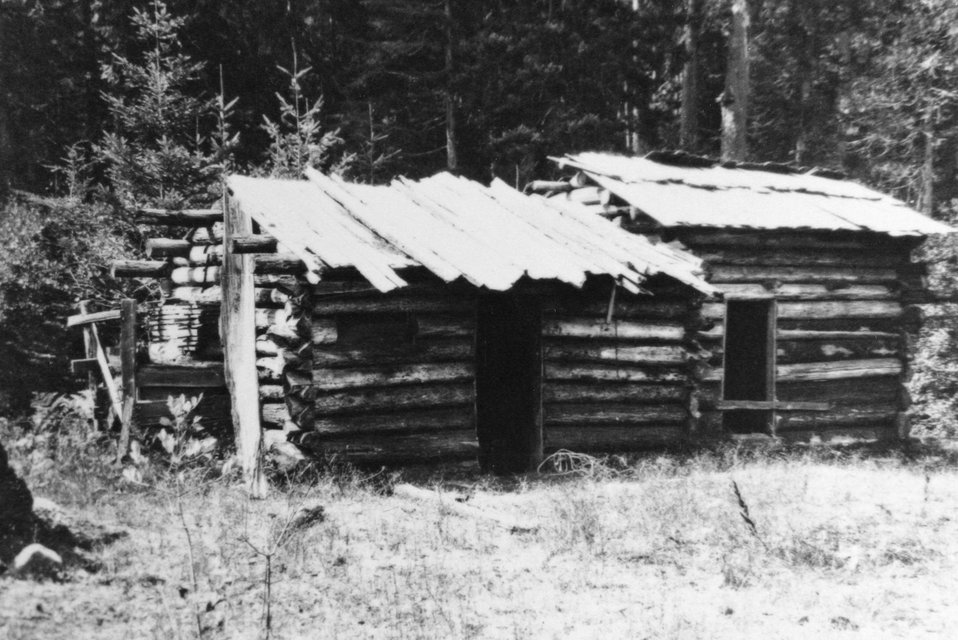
A homestead cabin.